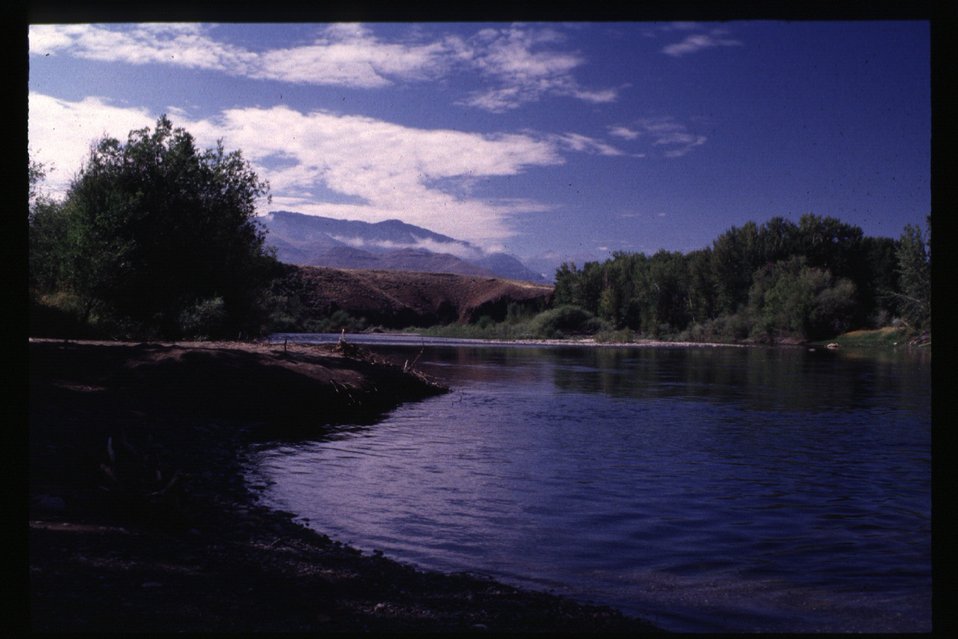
Salmon River Scenic Salmon Field Office UCSC Upper Columbia Salmon Clearwater District